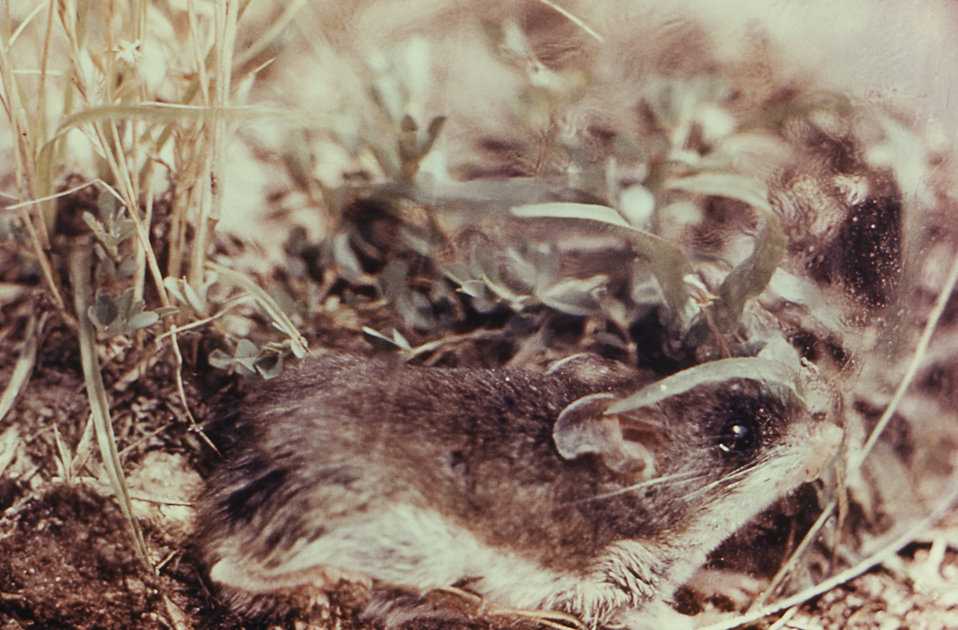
This image depicts an old-field mouse, Peromyscus polionotus, which is a carrier of the dermatophytic fungus, Trichophyton mentagrophytes.